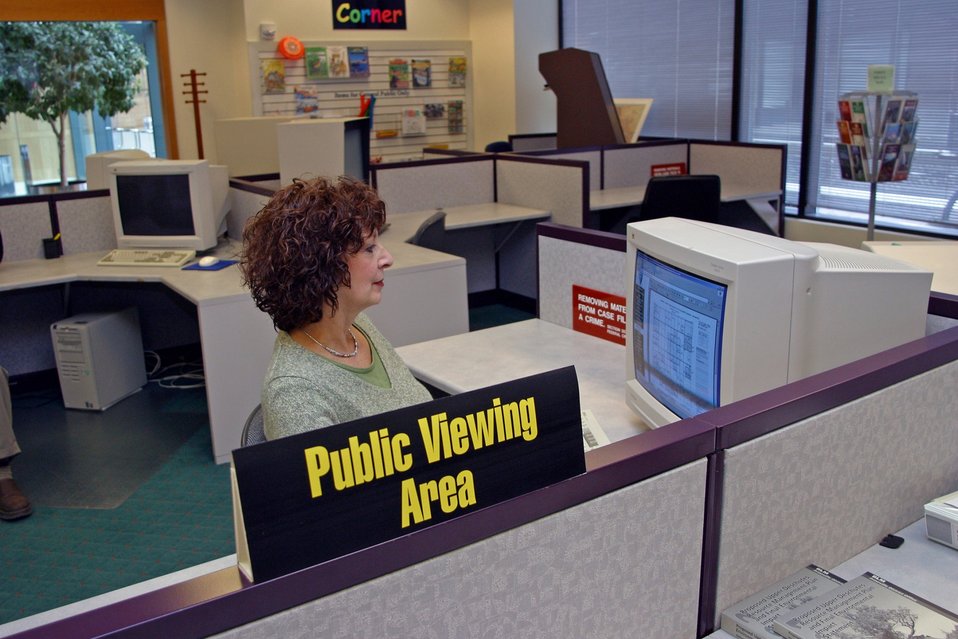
BLM's Land Office provides information about land status, minerals, maps, and general information to the public.